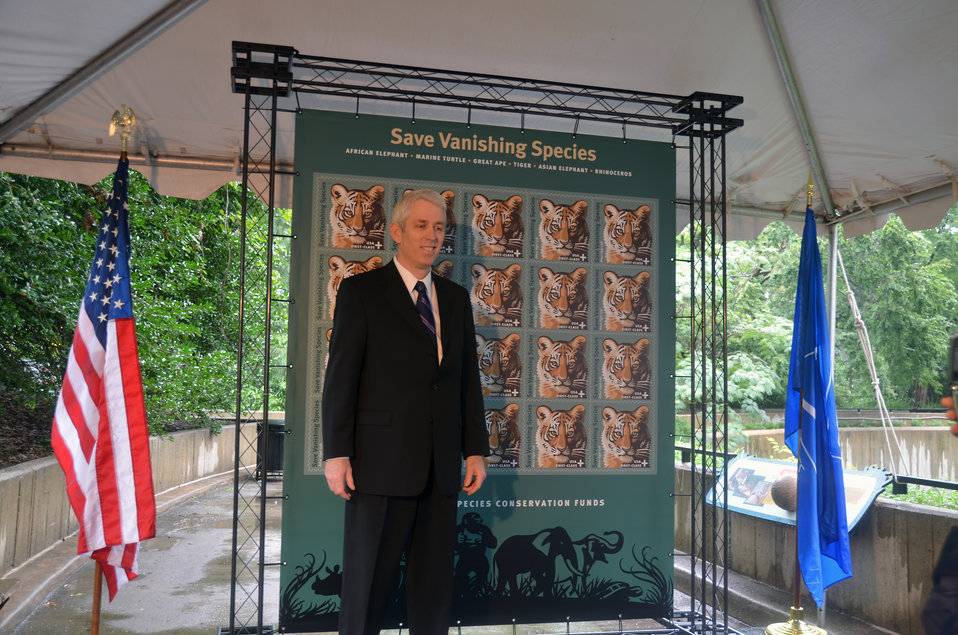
Save Vanishing Species Stamp First Day of Issue